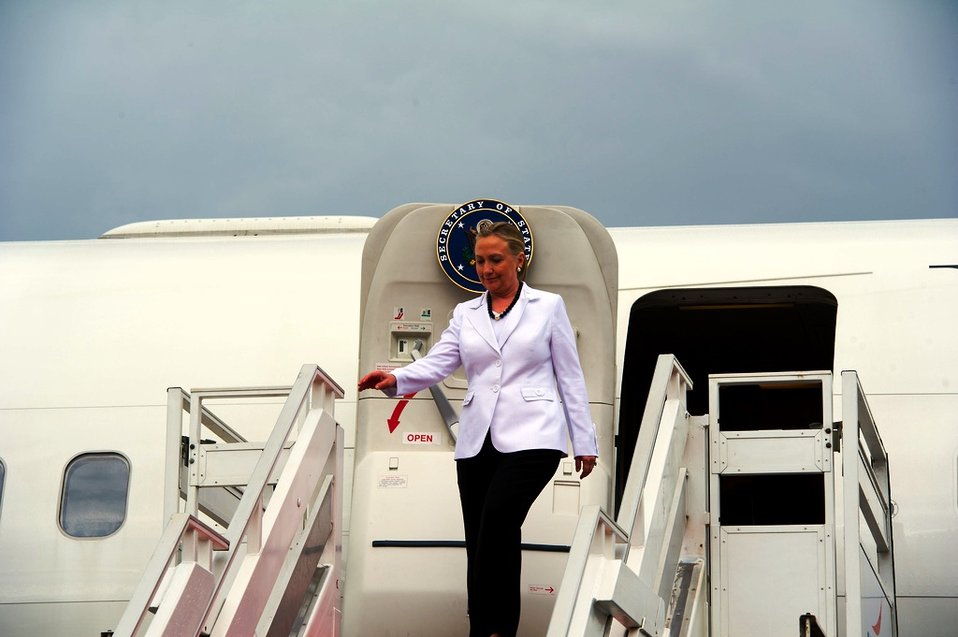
Secretary Clinton Arrives in Phnom Penh for ASEAN-Related Meetings

U.S. Secretary of State Hillary Rodham Clinton arrives in Phnom Penh, Cambodia, on July 11, 2012.